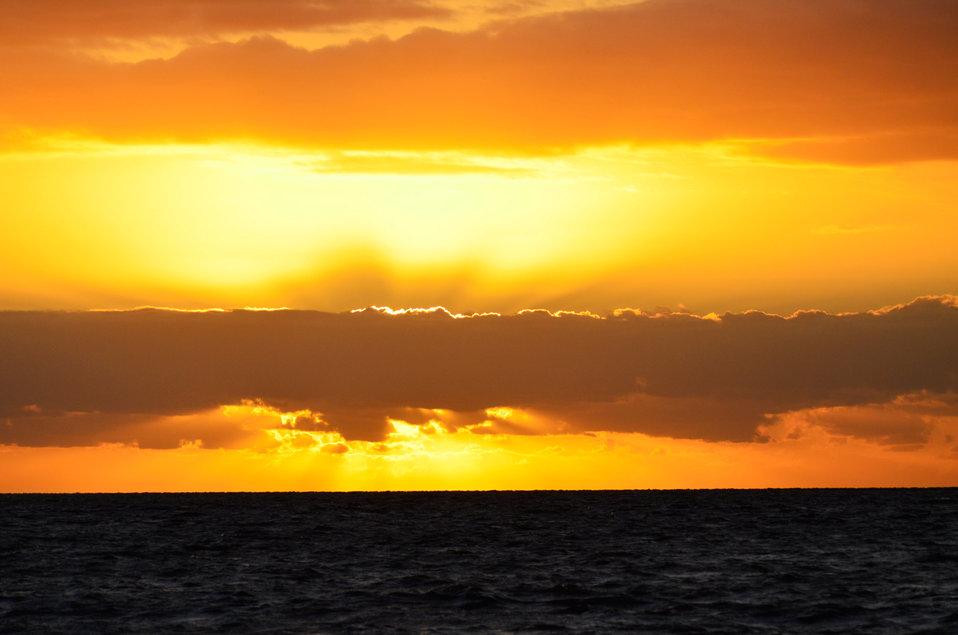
Sunset beach.